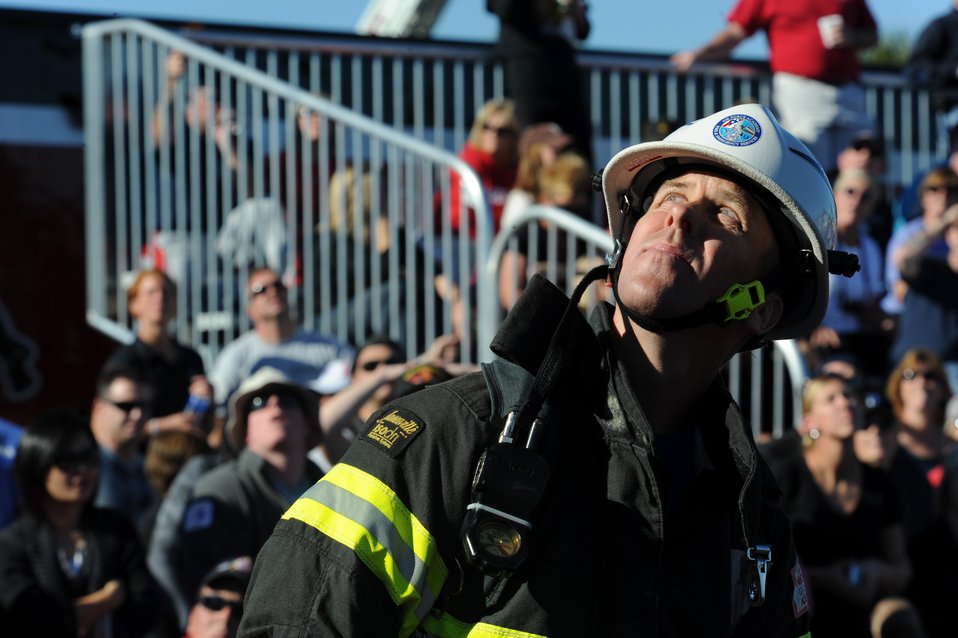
Academy firefighters win 3 world titles

Ken Helgerson waits for his teammate to pass the baton as he competes in the team relay event at Myrtle Beach, S.C., on Nov. 13, 2010. Mr. Helgerson is a firefighter at the Air Force Academy in Colorado Springs, Colo.